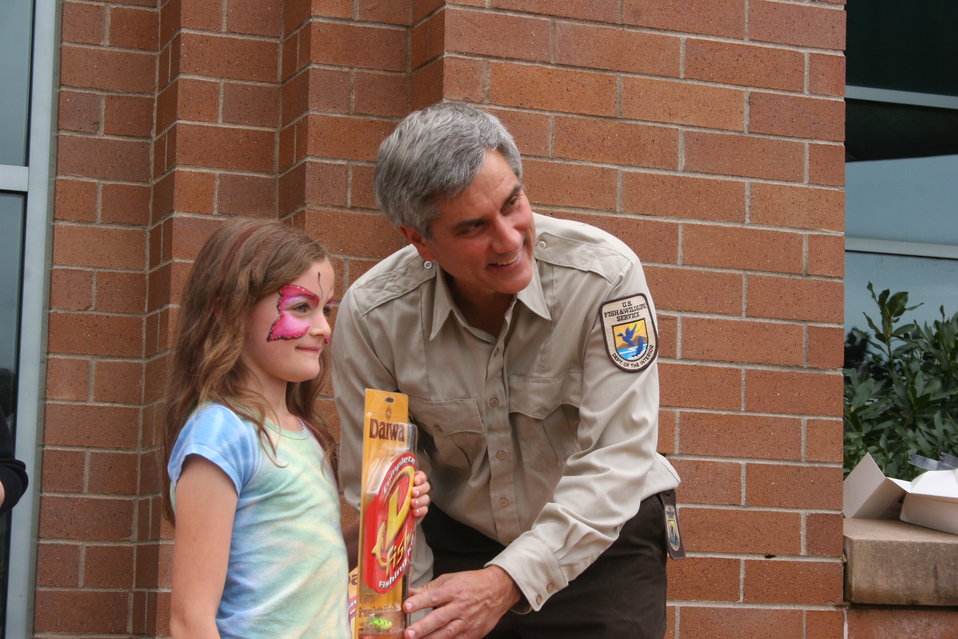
Winner - largest fish caught

Fishing event at U.S. Fish and Wildlife Service Regional Office in Hadley, MA